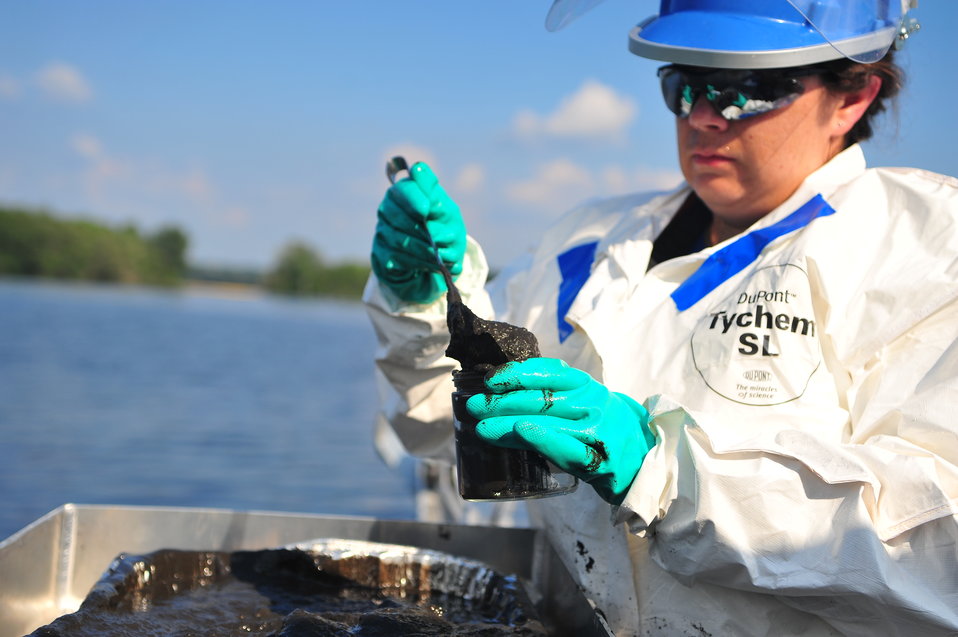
EPA's response to the Enbridge oil spill

August 2, 2010 - Water and sediment sampling operations during Enbridge Spill Response on Morrow Lake near Battle Creek, Michigan from Mudpuppy II, EPA's news research vessel.